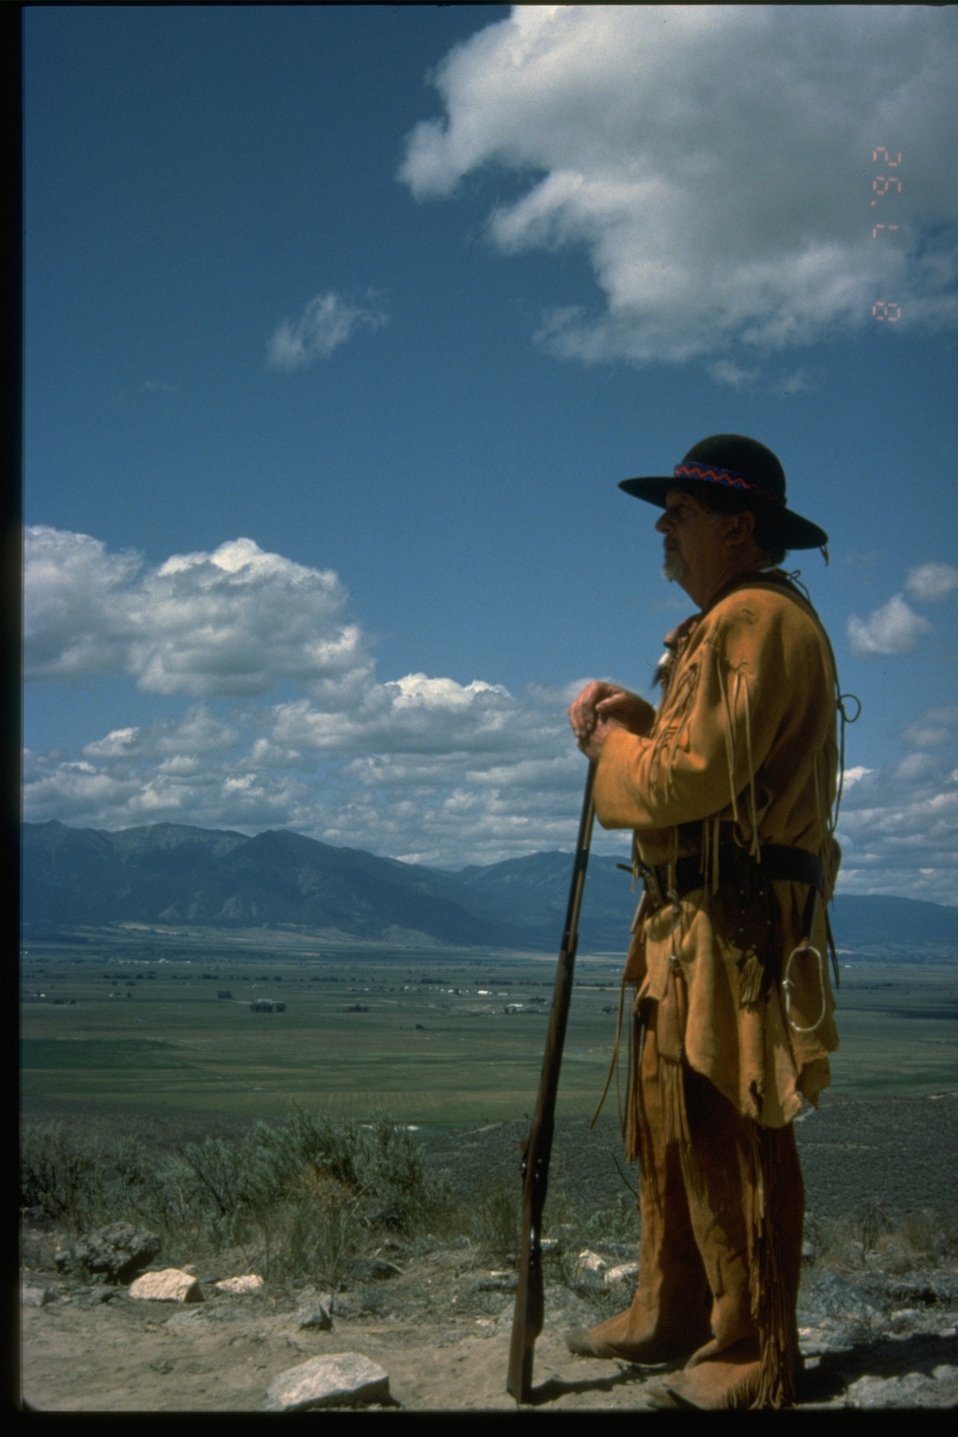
Mountain Man pioneer re-enactor.